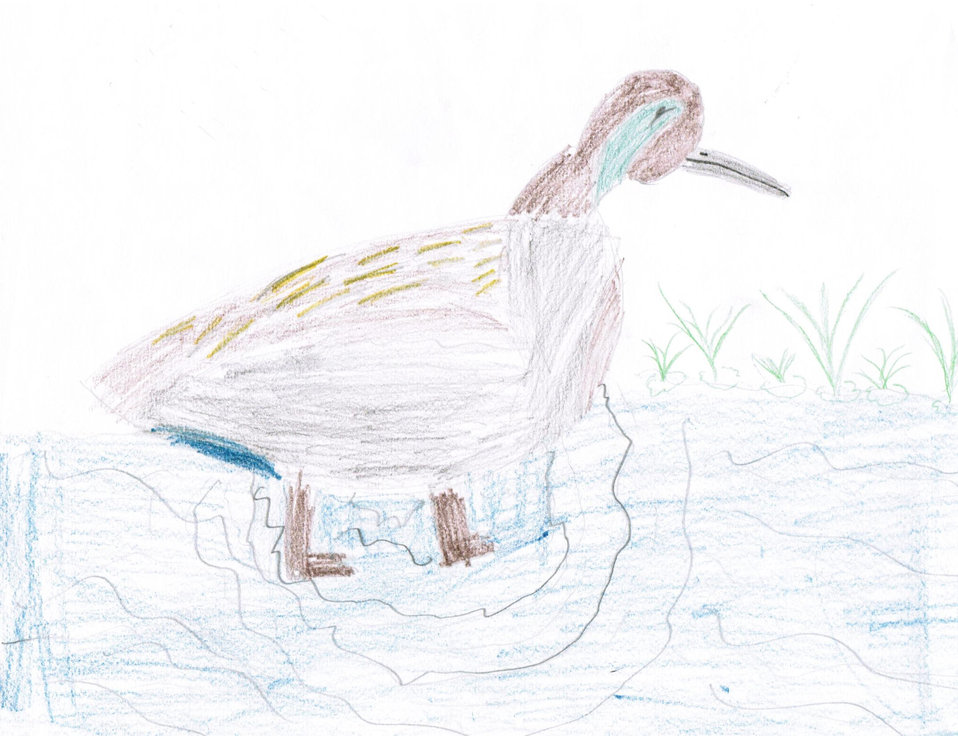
St. Croix VirginIslands

2012 Jr Duck Stamp Program
Territory Best of Show
St. Croix, Virgin Islands